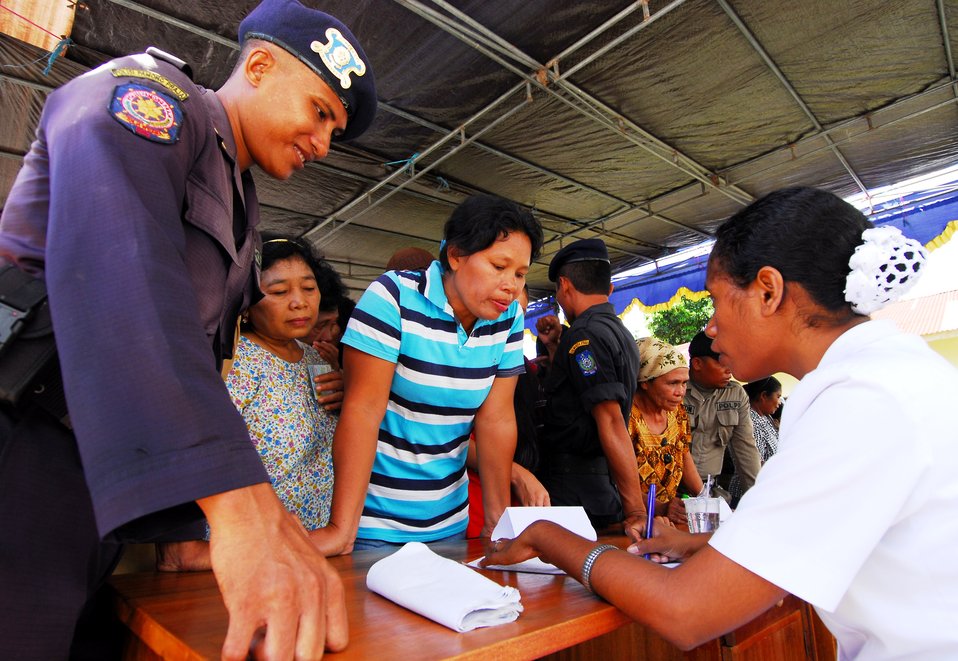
A patient checks in to receive medical screening and treatment during a medical civic action program in Tobelo, Indonesia, on July 14, 2010. USNS Mercy (T-AH 19) is in the North Maluku Islands conducting Pacific Partnership 2010, the fifth in a series of annual U.S. Pacific Fleet endeavors conducted in Indonesia as a disaster relief exercise to strengthen regional partnerships.